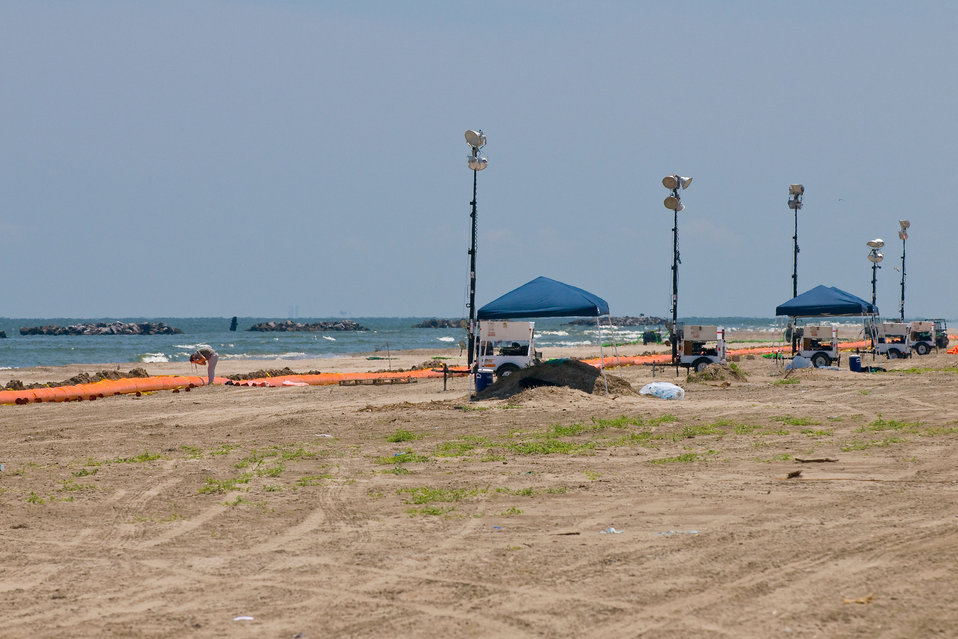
June 1, Lights ready for night cleanup operations

Orange flood control boom and ditches prepared to block oil from coming inland. Lights deployed for night operations.